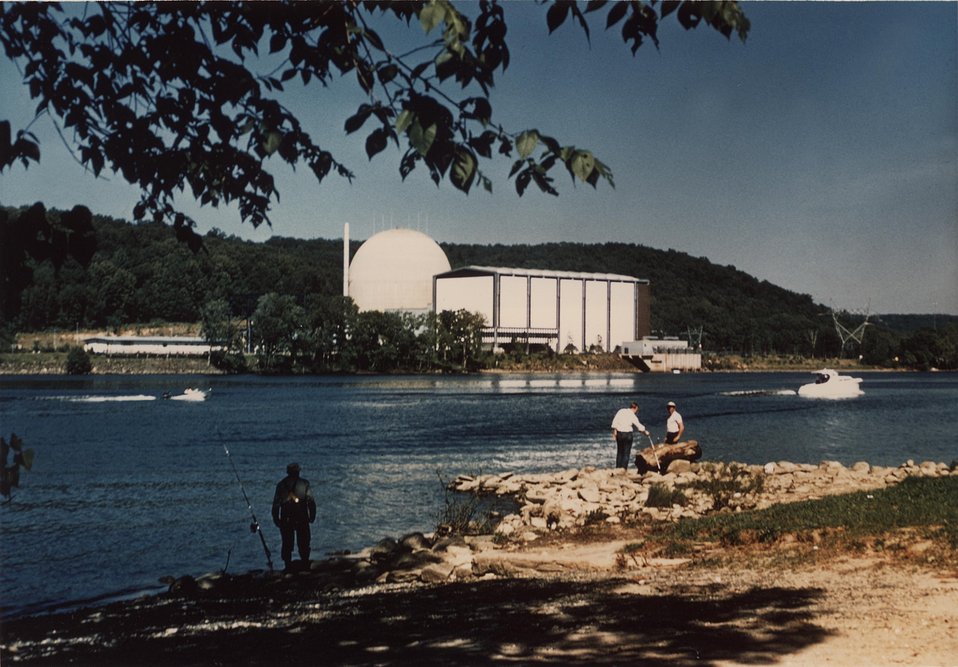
Haddam Neck.